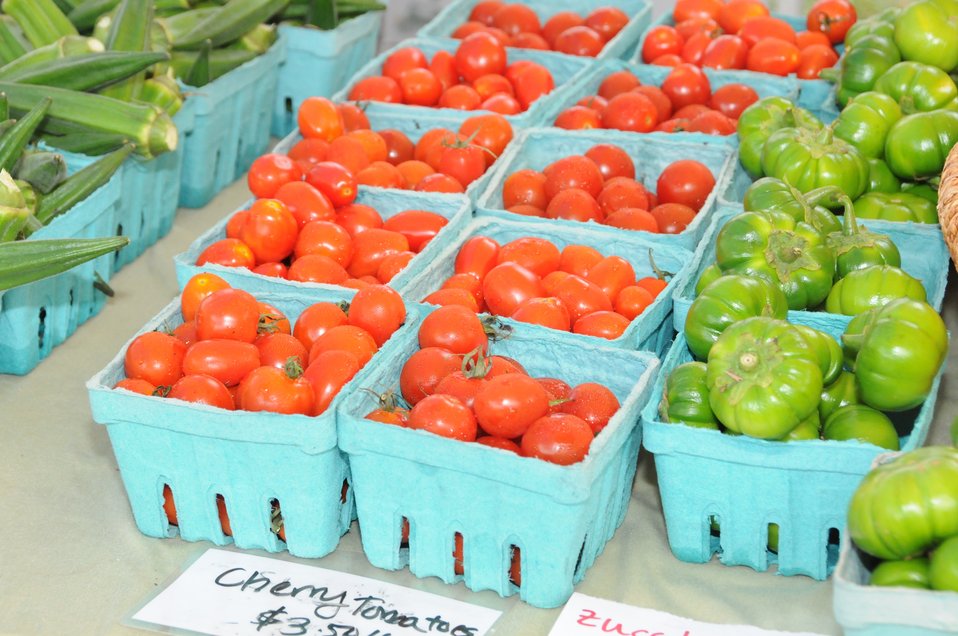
Cherry Tomatoes at the Columbia Heights Community Marketplace.